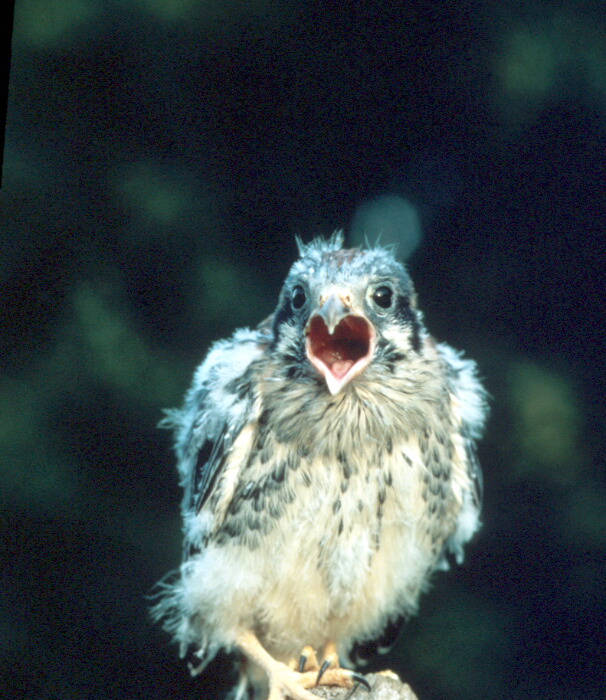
American kestrel chick